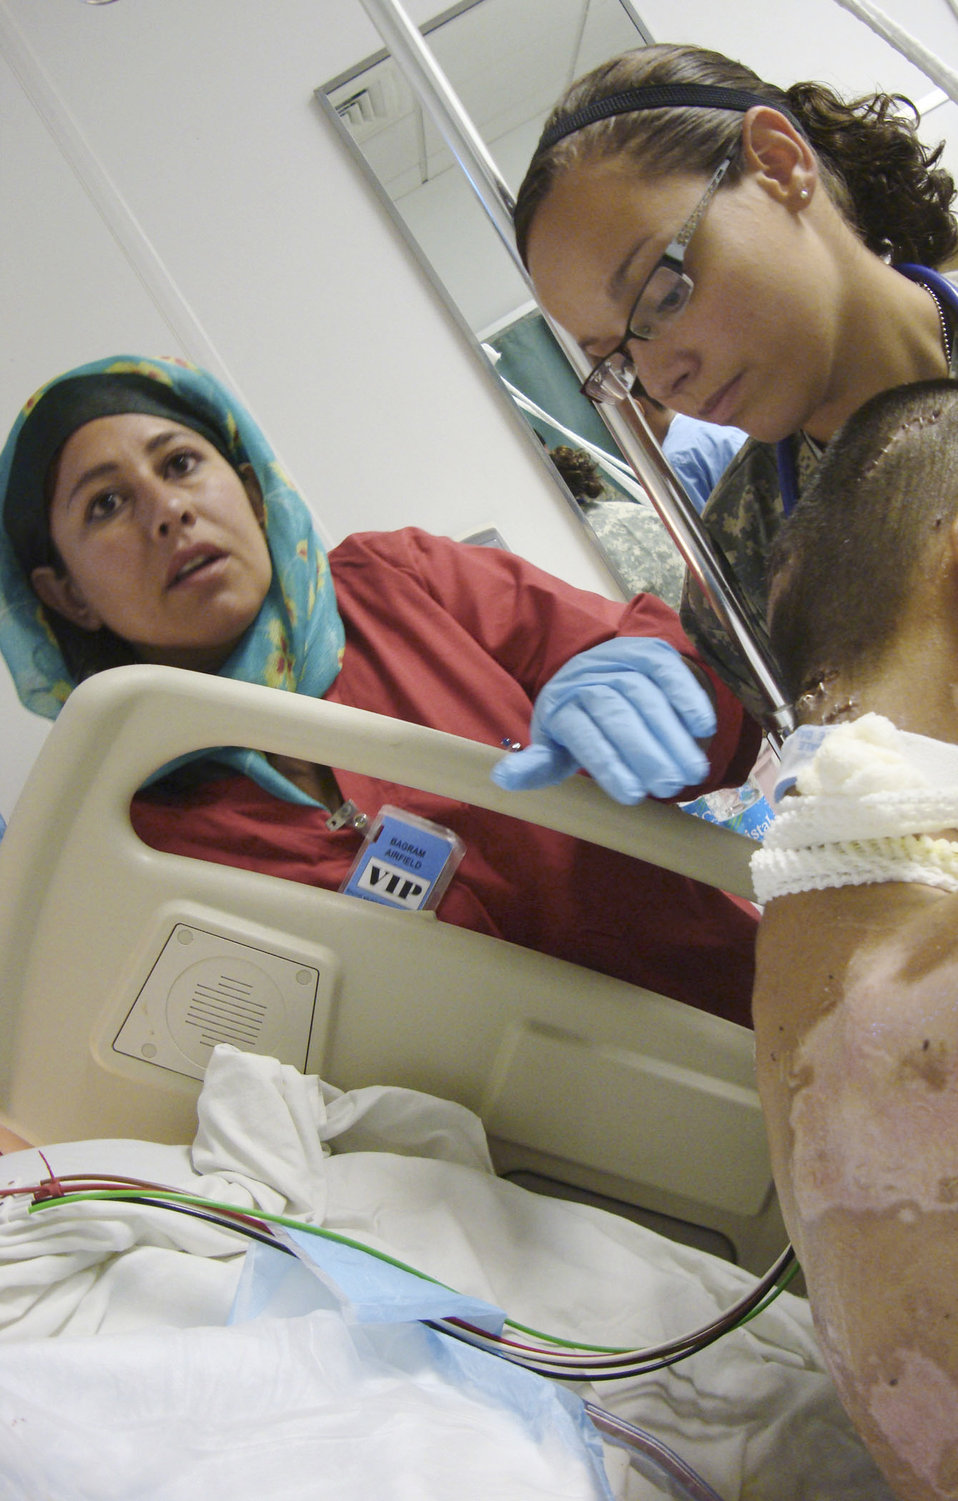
Craig Joint Theater Hospital helps build Afghan nursing foundation

Afghan National Army soldier Laila Farahi (left) assists 1st. Lt. Nicole Pries with a patient Oct. 14, 2009, at Bagram Airfield, Afghanistan. Lieutenant Pries is an intensive care ward nurse deployed from the David Grant Medical Center at Travis Air Force Base, Calif.